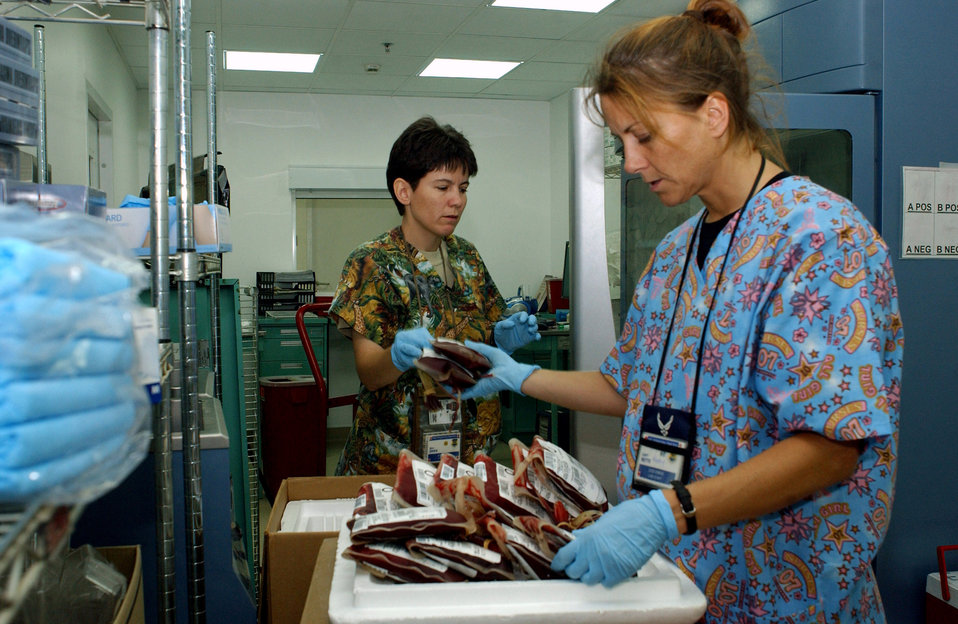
Balad's medics move into new facility

Maj. Julie Zwies and Capt. Kathy Betts inventory equipment at the new Air Force Theater Hospital at Balad Air Base, Iraq, Aug. 3. Starting at 4 a.m., about 150 base volunteers and 380 332nd EMDG Airmen moved patients and equipment to the newly upgraded, pre-engineered facility. Major Zwies and Captain Betts are assigned to the 332nd Medical Group lab flight.